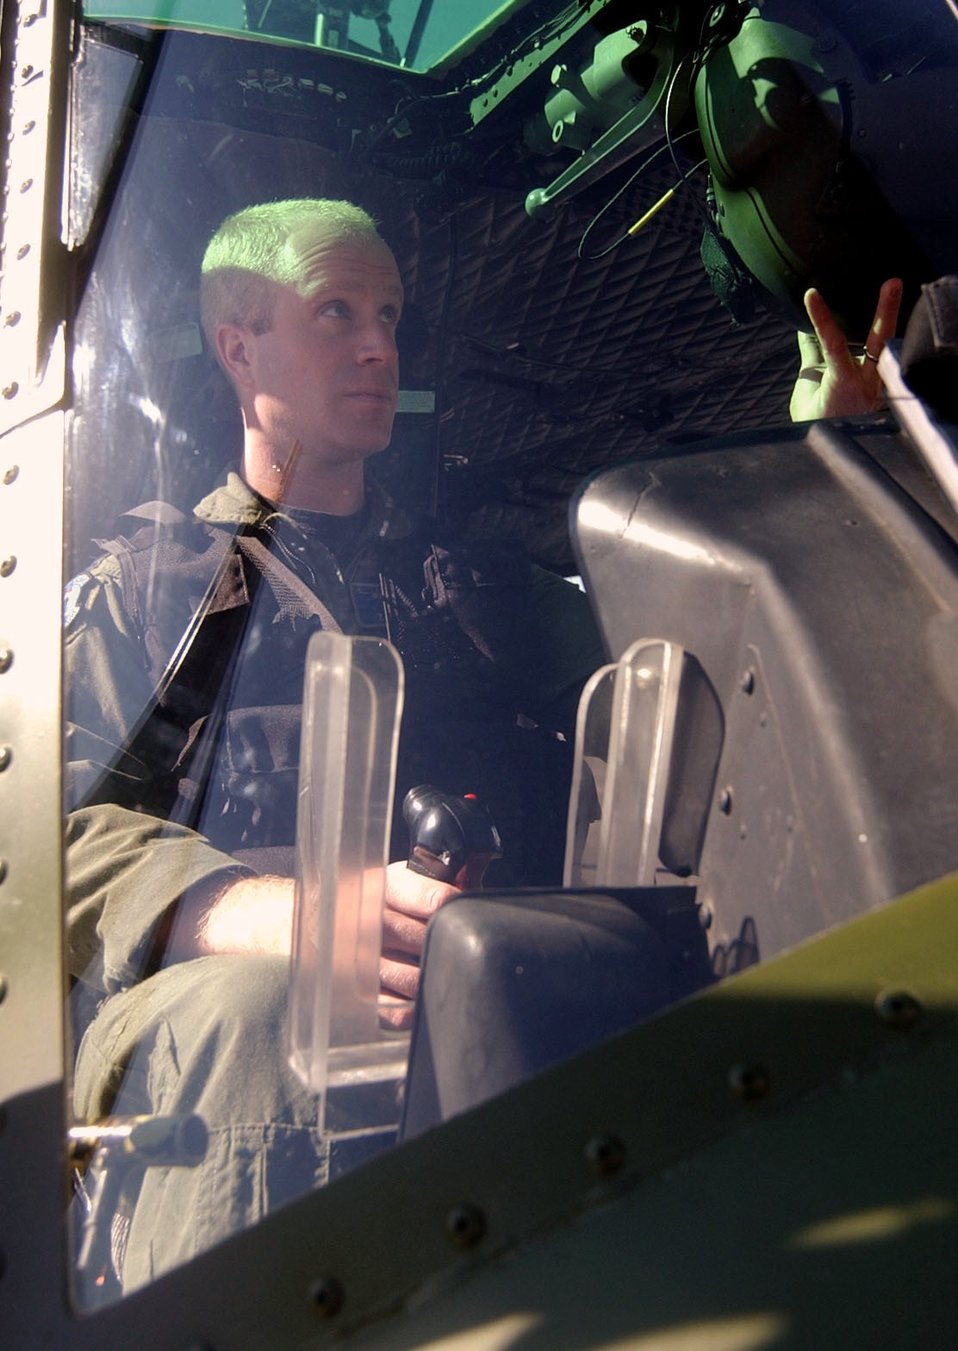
Airmen make two saves in one day

FAIRCHILD AIR FORCE BASE, Wash. -- Capt. Zach Guza was the aircraft commander July 17 for his third and fourth saves since arriving here. He and his crew rescued two injured hikers in the Cascade Mountain Range. He is assigned to the 36th Rescue Flight.